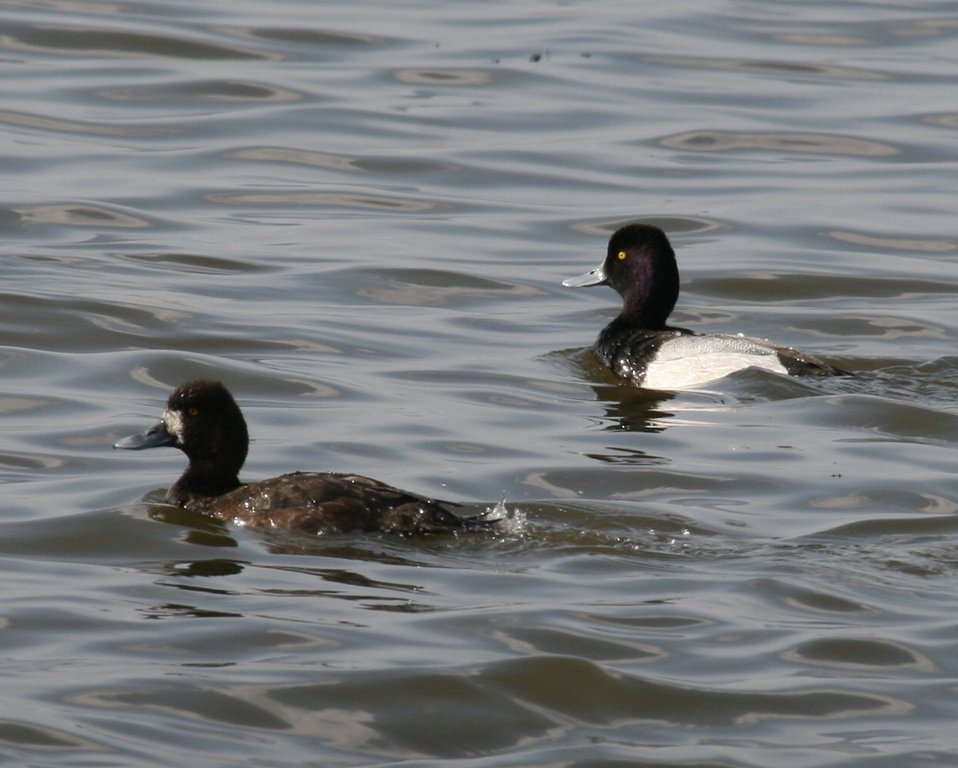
A Pair of Lesser Scaup

The lands of the refuge were established to protect and provide habitat for migratory birds that cross State lines and international borders and are by law a Federal trust responsibility.

The refuge is of great value to waterfowl and shorebirds, as well as other migrating water-dependent bird species, because of the diversity of wetland and upland habitats that provide for the diverse life cycle needs of these species.